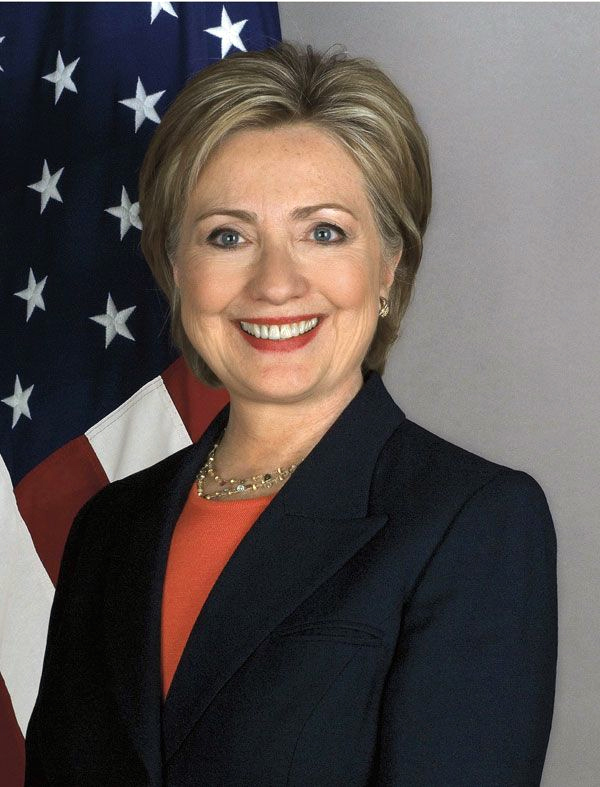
Official Portrait of U.S. Secretary of State Hillary Rodham Clinton